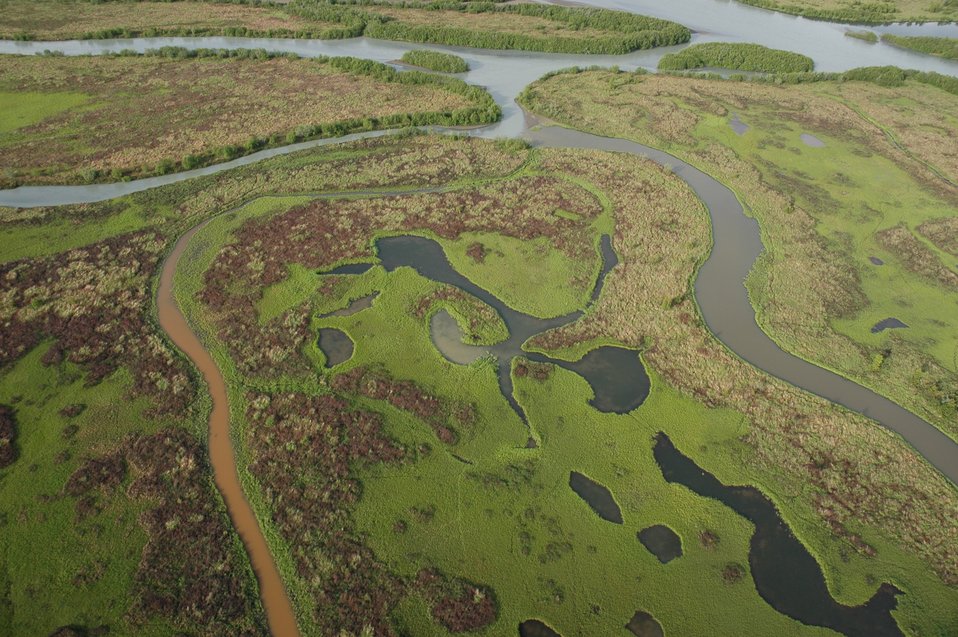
Aerial photograph. Meandering streams in the intertidal zone.